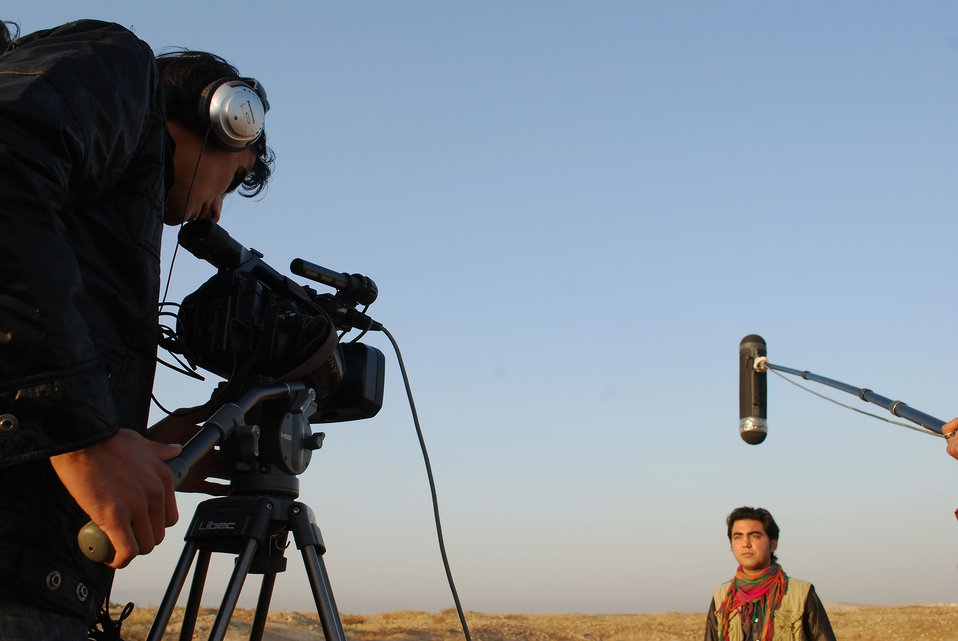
'On the Road' in Balkh Province